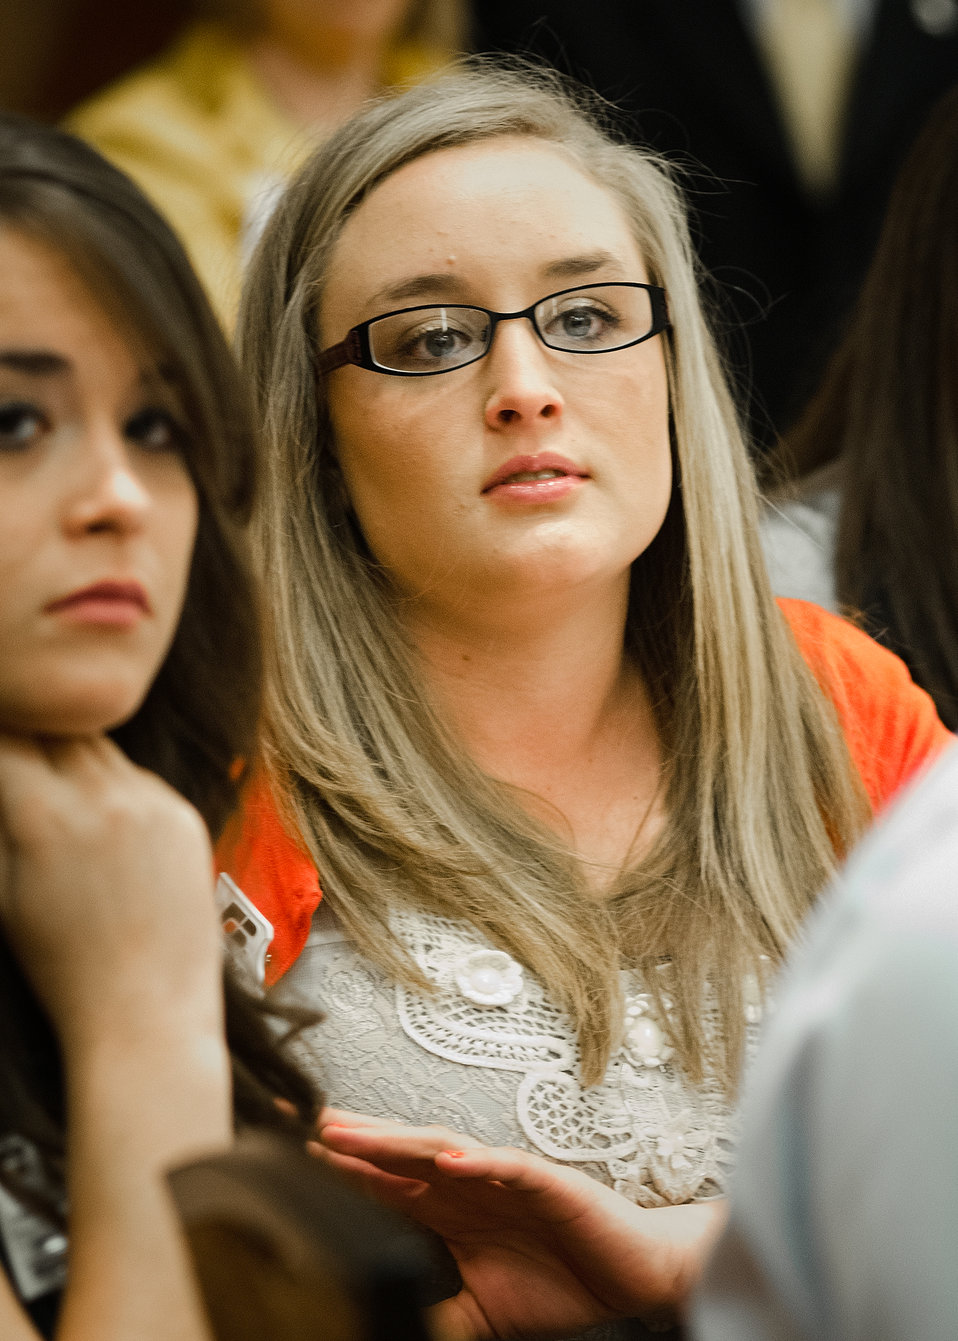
University of Missouri Agriculture Education major from Tipton, MO, Taylor Huhmann listens to Agriculture Secretary Tom Vilsack’s interview with Agritalk Host Mike Adams during a meeting with the Missouri Farm Bureau in Washington, D.C., on Tuesday, March 20, 2012. Agritalk, The Voice of Rural America is a radio network based in St. Louis, Missouri reaching out to the American Mid-West.